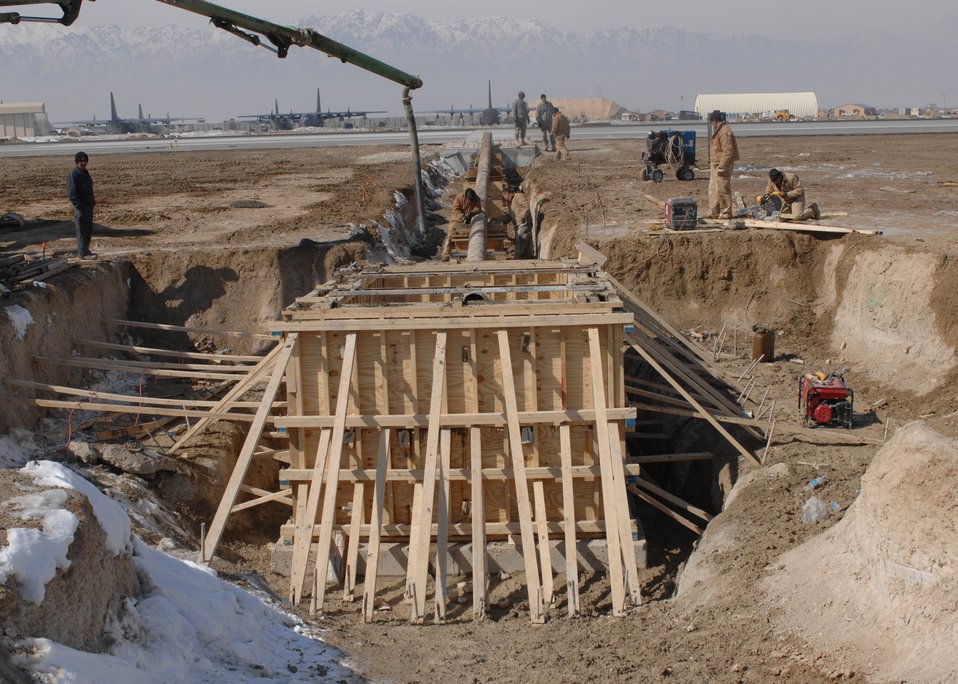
RED HORSE team improves flightline operations

Airmen from the 1st Expeditionary RED HORSE Group work construction on a new barrier arresting kit at Bagram Air Base, Afghanistan, Feb. 13. Once the BAK 12 is finished, it will be used to stop aircraft with tail hooks that have hydraulics or brake problems. The BAK 12 system is scheduled to be complete by mid-March.